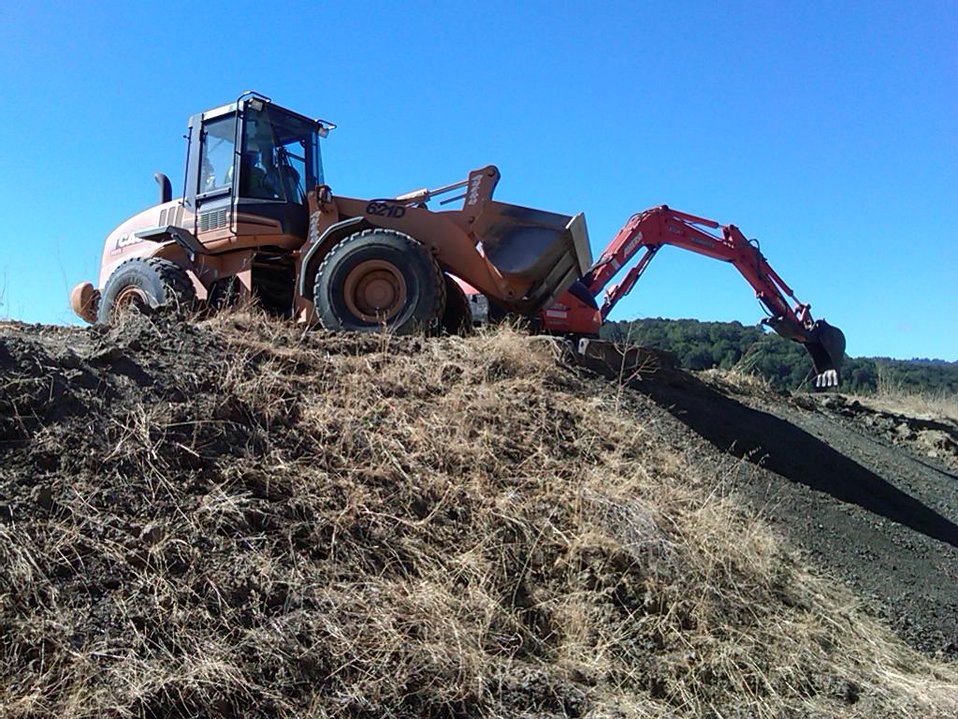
Recovery Act Supports Soil and Debris Cleanup, Groundwater Treatment at SLAC

Recovery Act workers are on track to remove more than 30,000 cubic yards of contaminated soil and debris at the SLAC National Accelerator Laboratory by September 2011.
The Recovery Act invested $14.3 million in legacy cleanup activities at SLAC. In addition to removing contaminated soil and debris that is shipped to local disposal facilities, Recovery Act workers installed three new groundwater treatment systems.